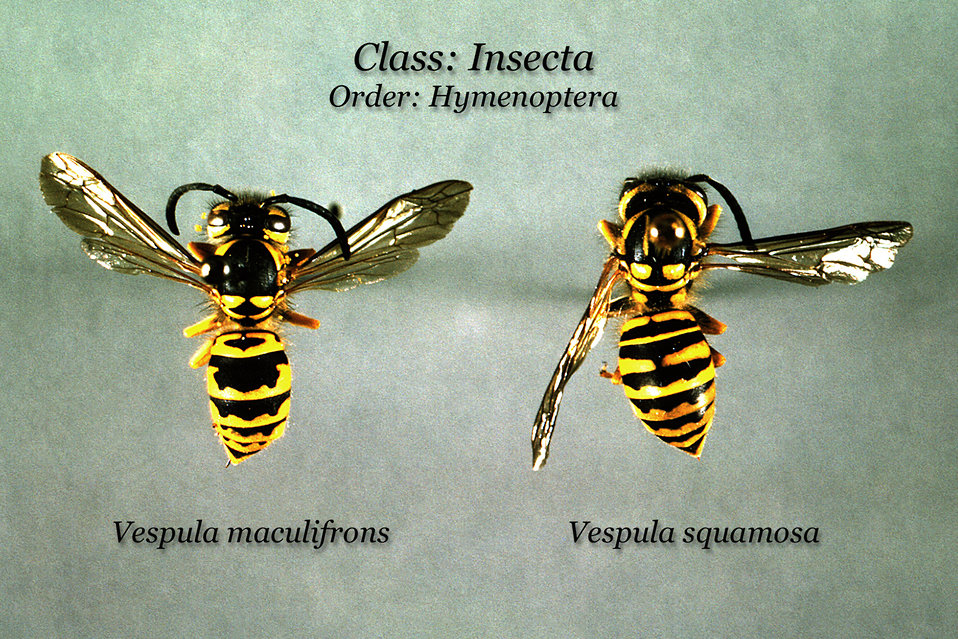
This image depicts two 'worker' yellowjacket wasps, Vespula maculifrons (Lt), and Vespula squamosa (Rt).